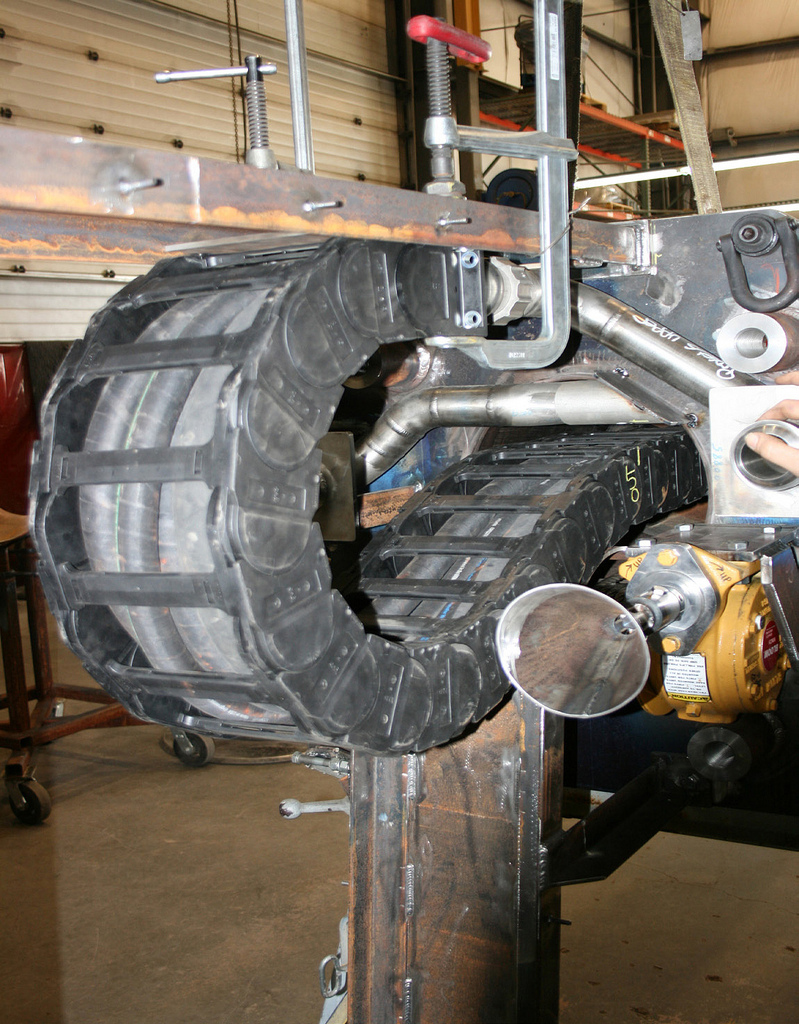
Next generation of slurry pump aims to improve retrieval operations reliability

Slurry pumps are used in the tank farms to pick up liquid and solid particle mixture, or slurry, and provide the force necessary to transport the waste from tank to tank during retrieval operations.

These are typically adjustable-height pumps that use a telescoping tube-in-tube type assembly. The hydraulic-driven pumps include hydraulic lines along with a rubber discharge hose which, in past testing, showed a tendency to hang up, snag or buckle.